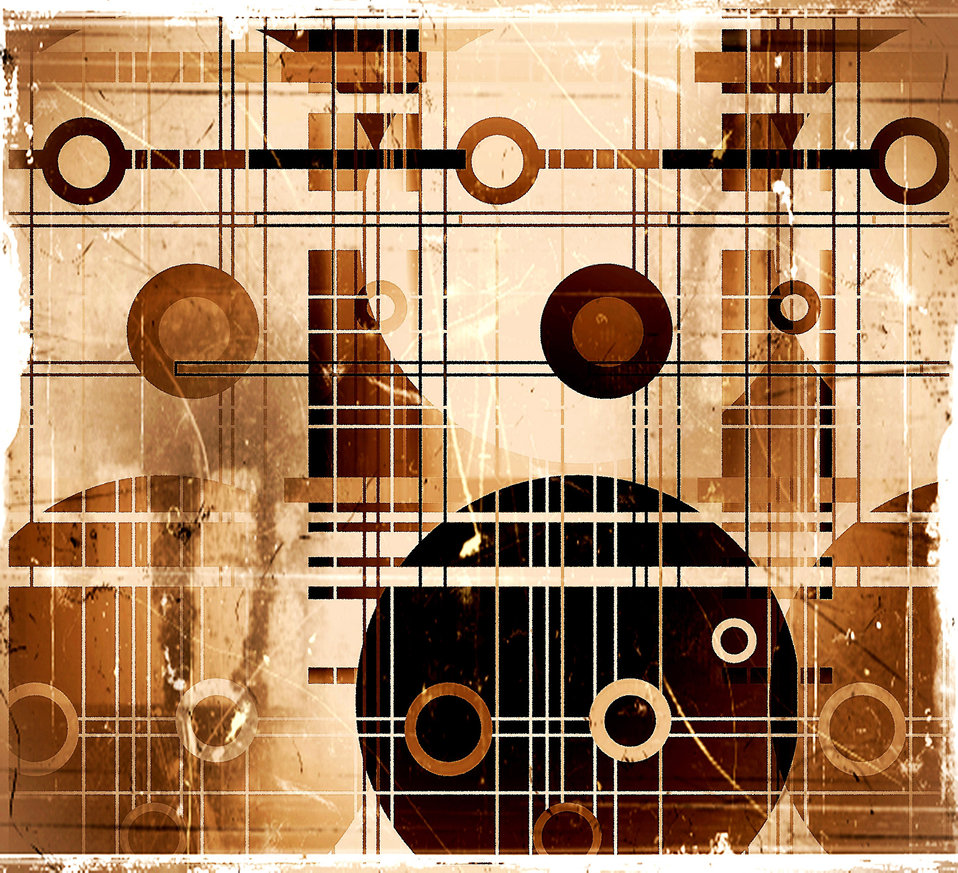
Old ties

Background.